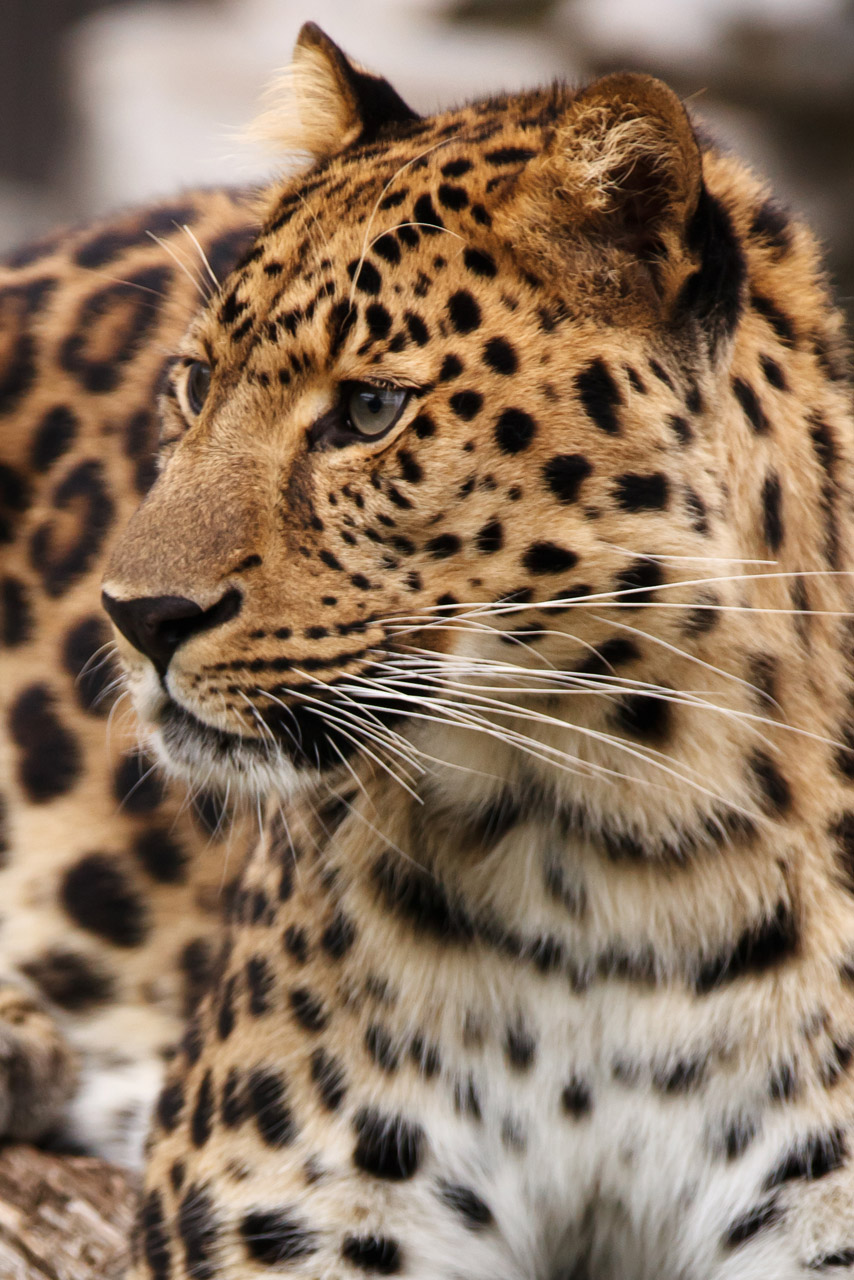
Leopard on alert

Leopard is looking at something.